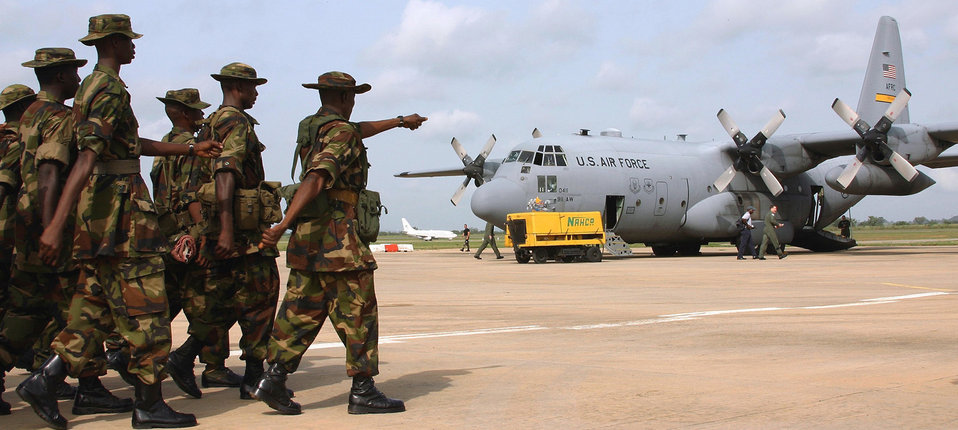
Airmen visit Rwanda genocide memorial

ABUJA, Nigeria -- Nigerian troops march toward an Air Force C-130 Hercules. The aircraft flew them to the Sudan on Oct. 28. President Bush sent two C-130s to the African Union to help reduce the humanitarian crisis in the Darfur region.